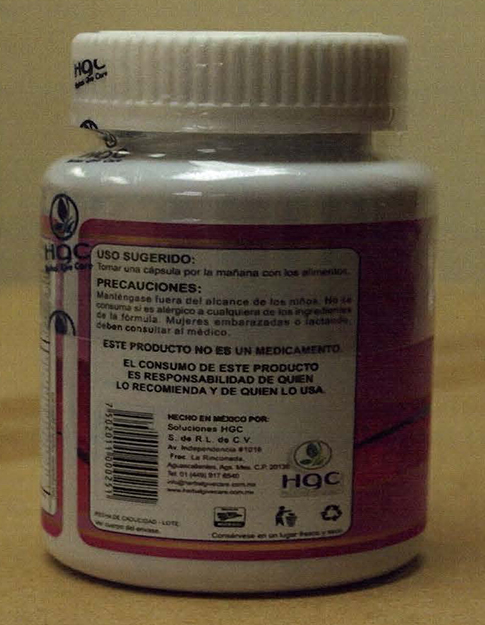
RECALLED – Dietary Supplement

August 16, 2013 – Product Recall – Herbal Give Care LLC Issues Voluntary Nationwide Recall of Esbelder Man Capsules, Esbelder Fem Capsules, and Esbelder Siloutte Capsules Vitamin Supplements Due to Potential Health Risks.